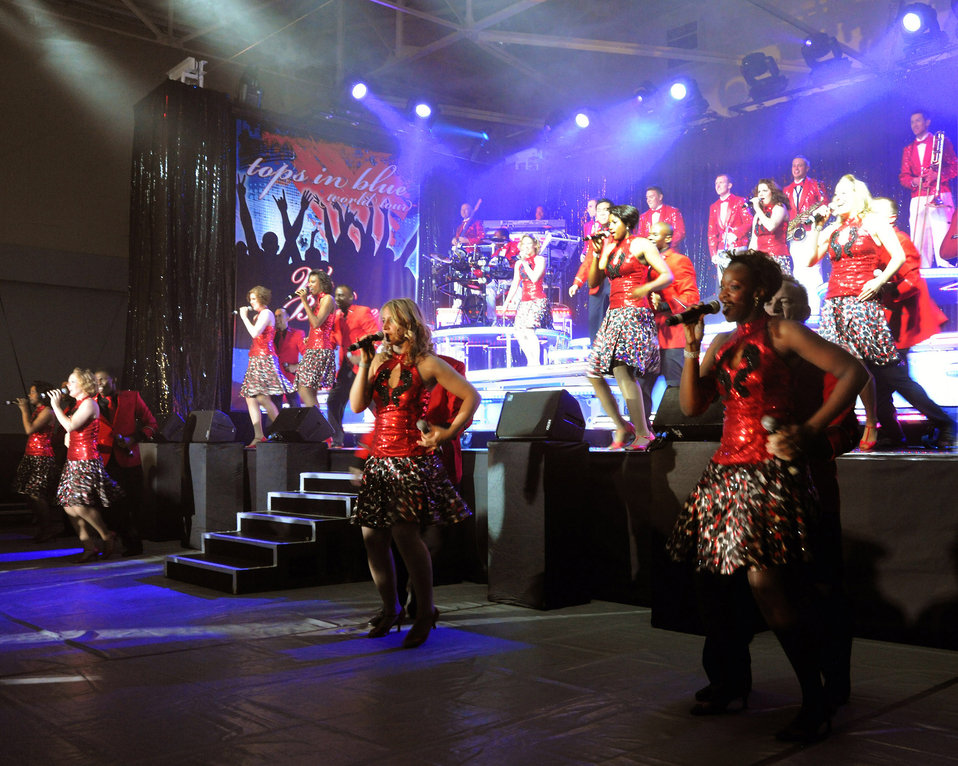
'Tops in Blue' perform overseas

Tops In Blue performs to a capacity crowd June 22, 2010, at Royal Air Force Croughton, England. The Tops In Blue schedule will have them perform in more than 25 countries and close to 140 performances.